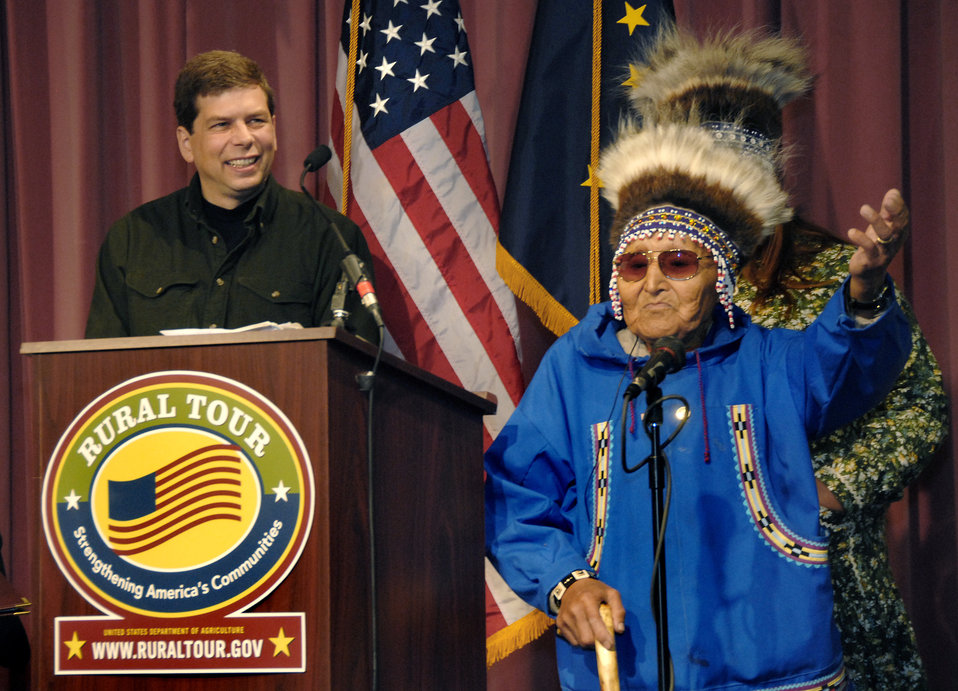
Rural Tour 0063

Rural Tour Alaska Aug 2009